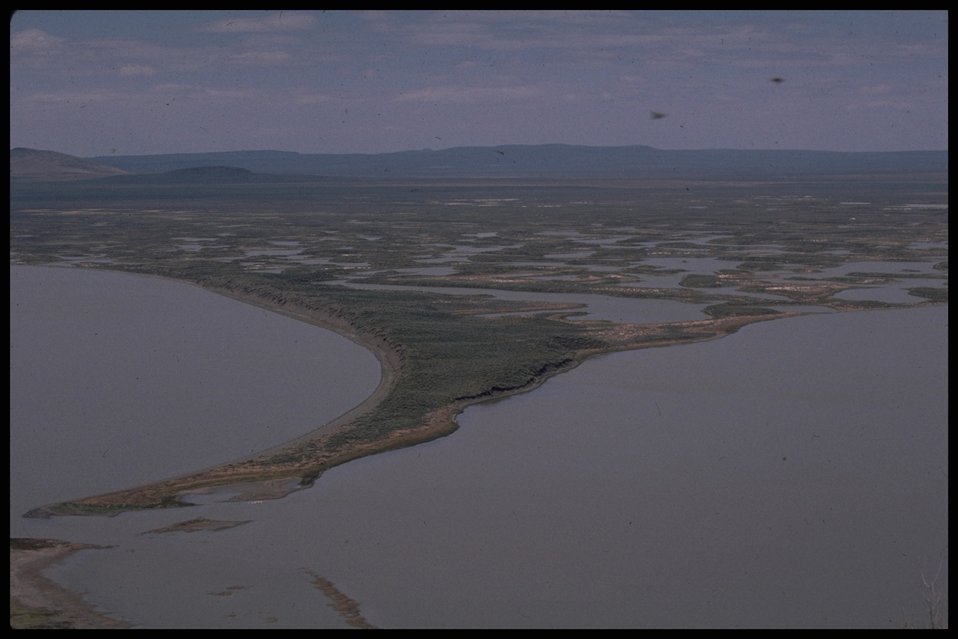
Scenic view of Warner Wet Lands, Lakeview District.